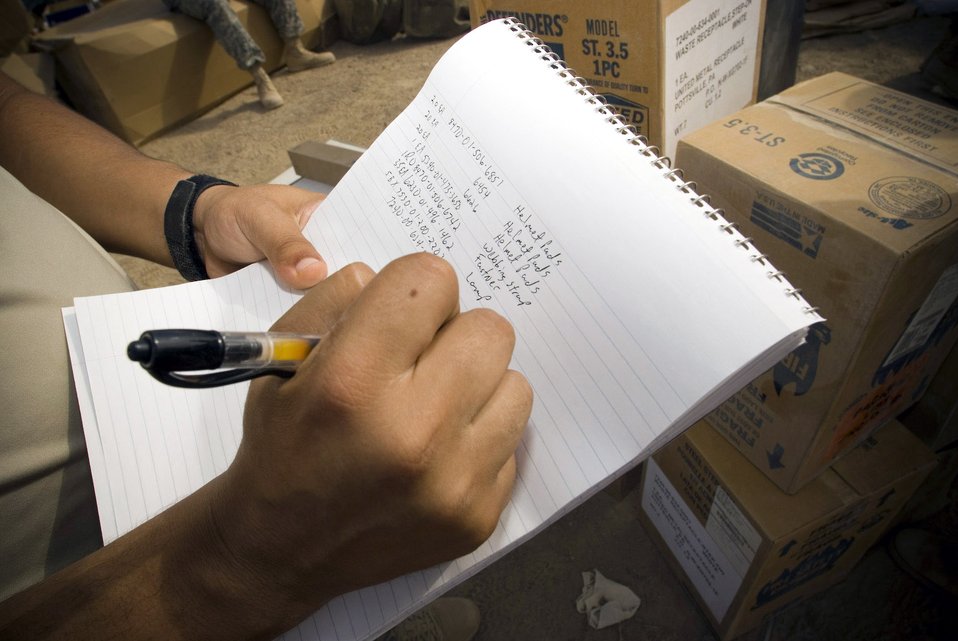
Mobile readiness team supports Army in Iraq

Tech. Sgt. Richard Carditl records the product name, quantity and national stock number of the items inside a container express Oct. 19 at Camp Corregidor, Iraq. Serviceable assets recovered from the container express are inventoried and redistributed to Army units throughout Iraq. Airmen of various career fields augment the Army in nontraditional